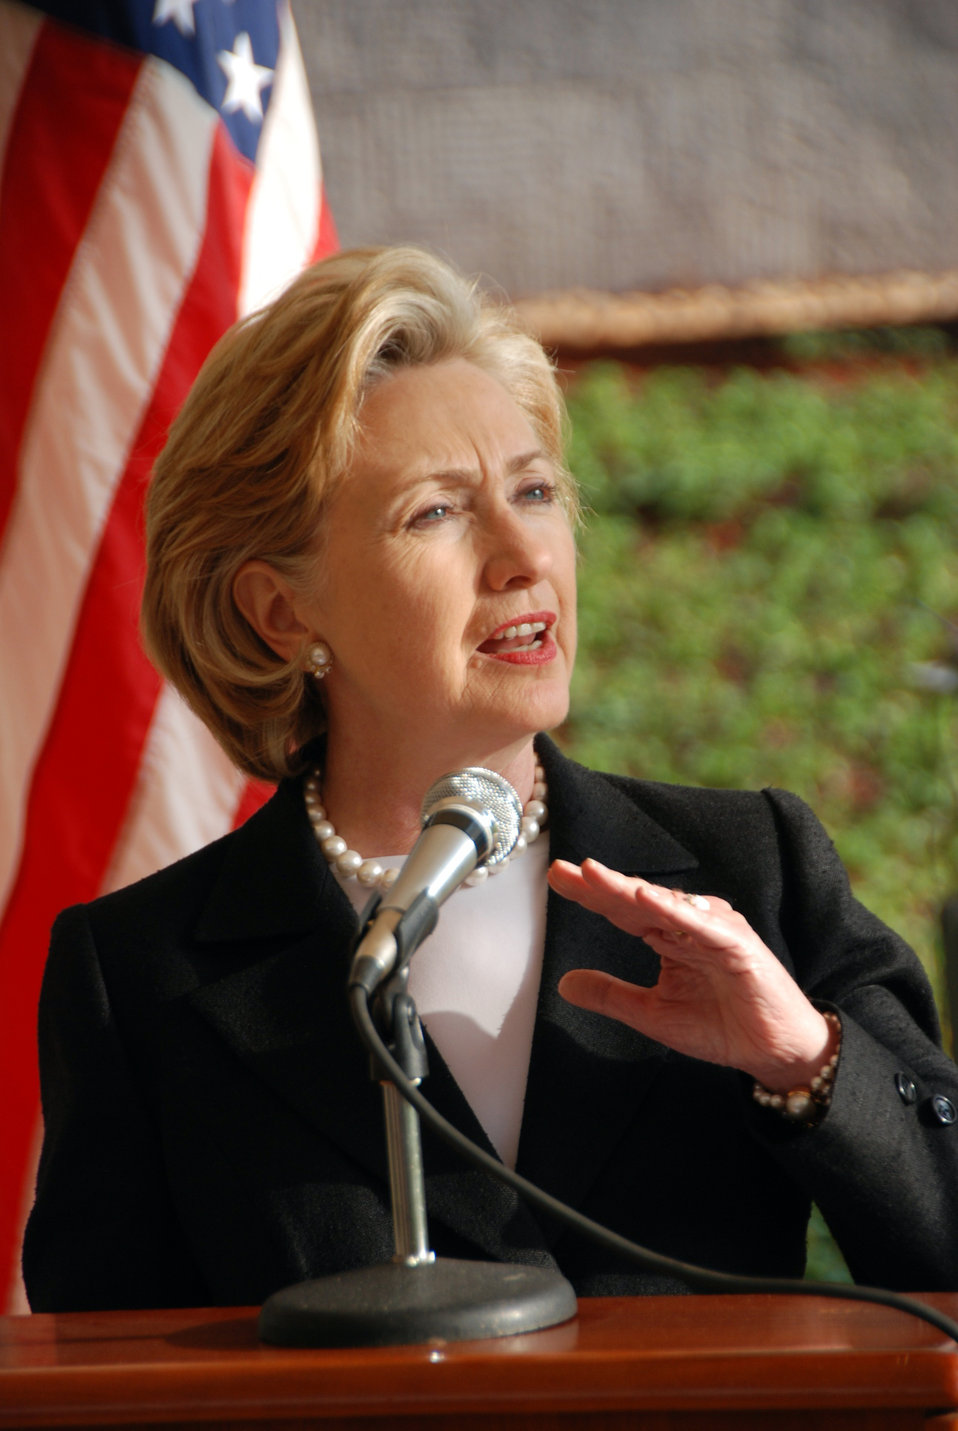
Secretary Clinton Addresses U.S. Embassy Staff in Kenya

U.S. Secretary of State Hillary Rodham Clinton addresses U.S. Embassy employees in Nairobi, Kenya August 6, 2009.